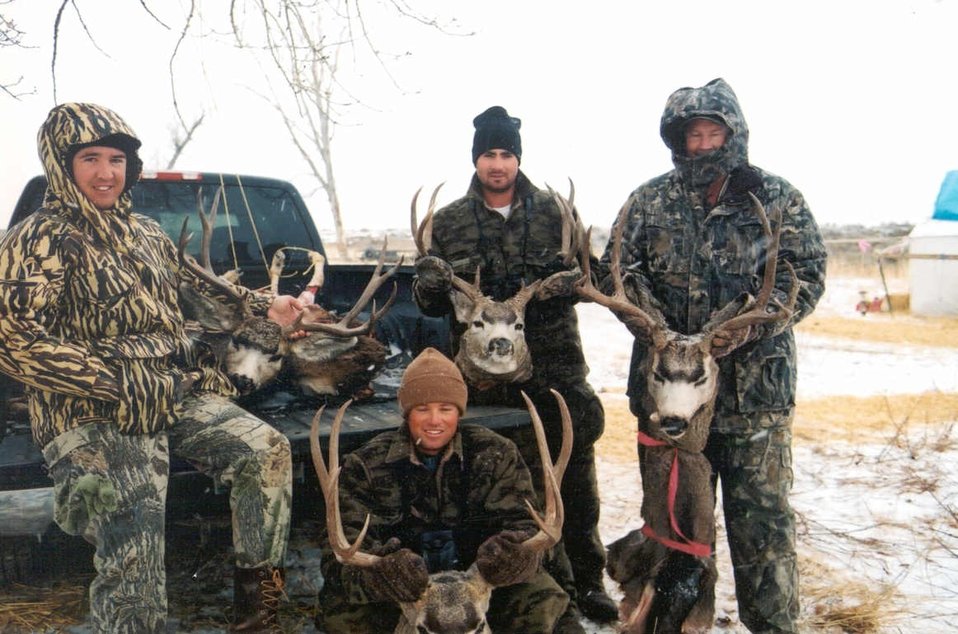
Hunters and Bucks

Four Texas hunters proudly display their bucks at Charles M. Russell NWR in Montana.